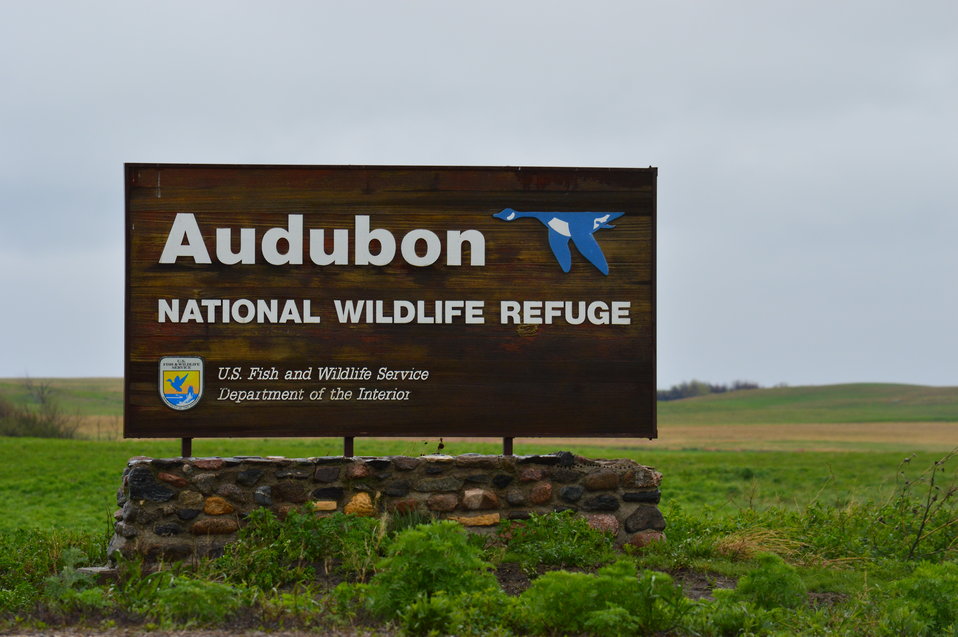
Audubon NWR sign

Scenery and wildlife and Audubon National Wildlife Refuge in North Dakota.